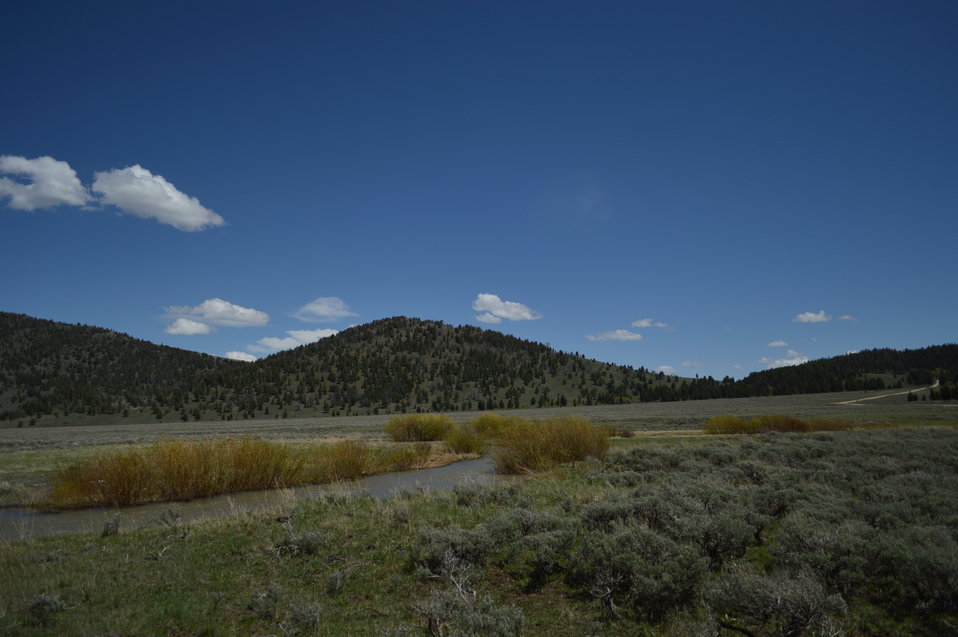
Regional Leadership Visit to Montana 2014